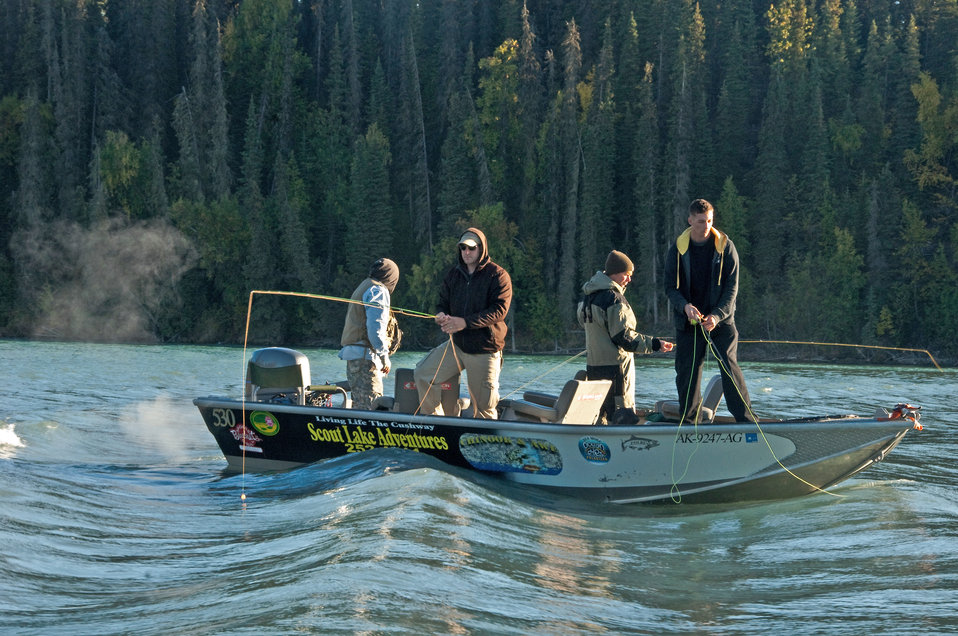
Alaska's Healing Waters

Members of the Alaska section of Project Healing Waters venture out to fish Sept. 11, 2010, on the Kenai River, Alaska. Project Healing Waters is an organization dedicated to the emotional and physical rehabilitation of wounded warriors through fly-fishing.